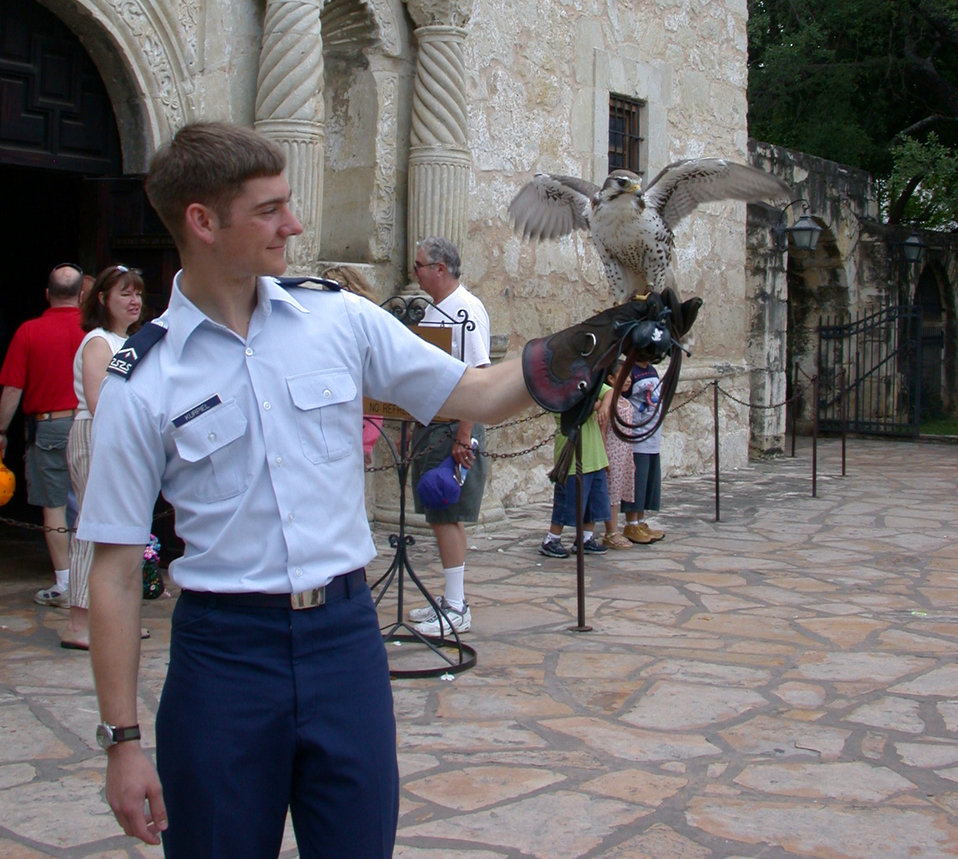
Falcon Fiesta

SAN ANTONIO -- Cadet 3rd Class Robert Kurpiel gets Echo, a prairie falcon, to flap its wings outside the Alamo here April 19. Cadet Kurpiel and Echo, both from the U.S. Air Force Academy, Colo., visited San Antonio to take part in the city's annual Fiesta celebration and teach people about the academy and its falcon mascots.